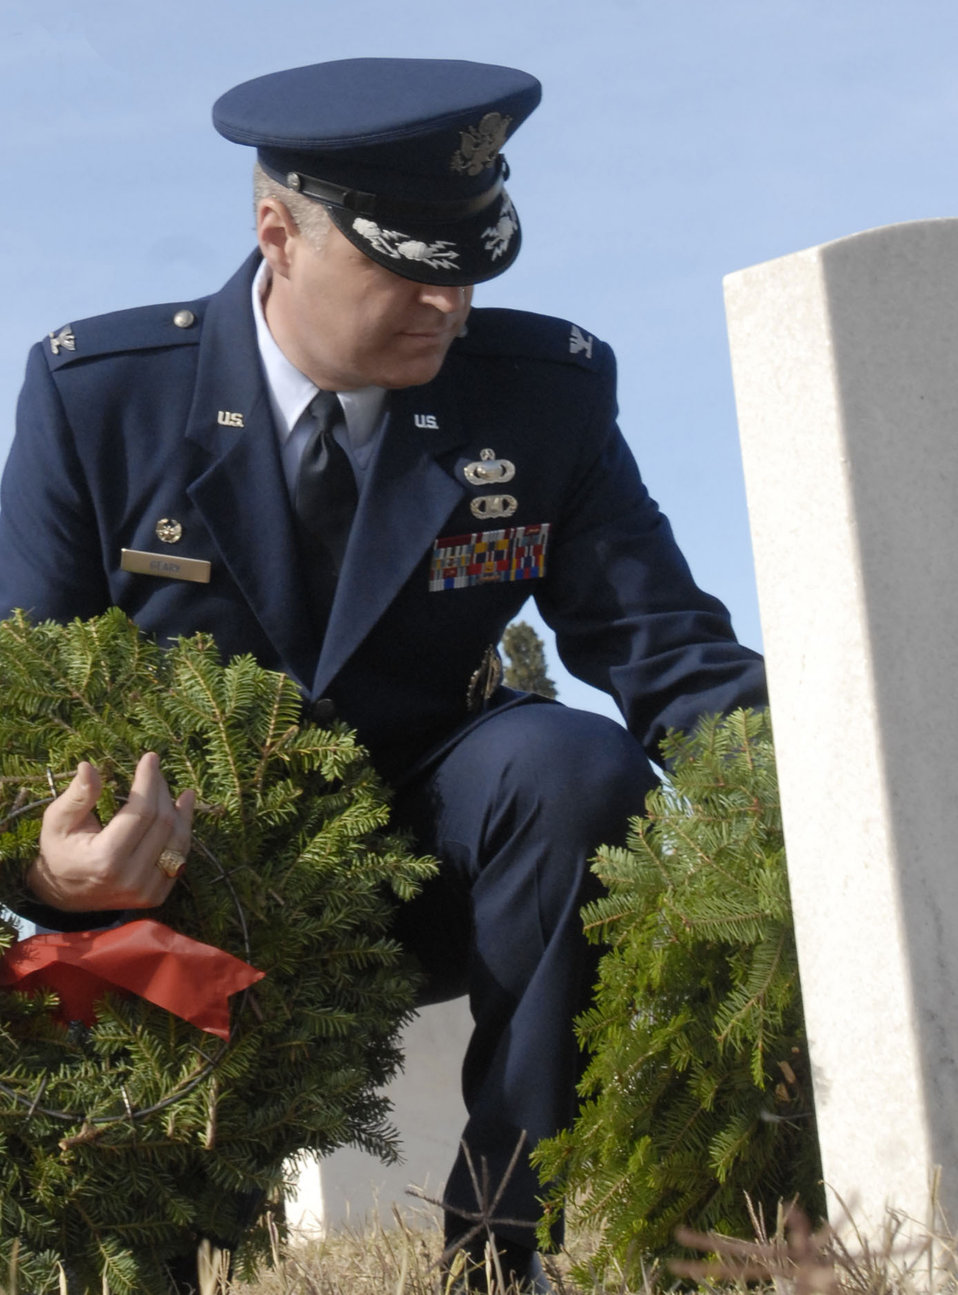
A holiday remembrance

Col. Thomas Geary lays a wreath on a veteran's grave at Belvedere Cemetery, in San Angelo, Texas, during the national Wreaths Across America Ceremony Dec. 11, 2010. Wreaths Across America was formed in 2007 to promote veterans remembrance where wreaths are placed on veterans' graves during the holiday season. Colonel Geary is the commander of the 17th Training Wing at Goodfellow Air Force Base, Texas.